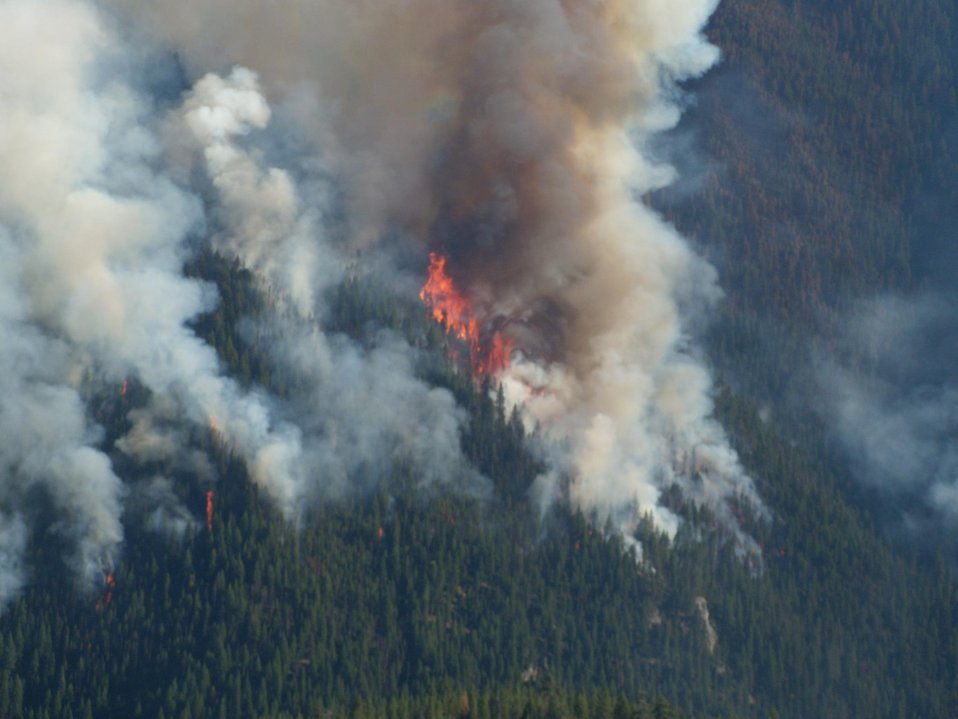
The Gold Pan Fire in the Bitterroot National Forest near Conner, MT began by lightning on Jul. 16, 2013 by lighting have consumed approximately 16,412 acres.